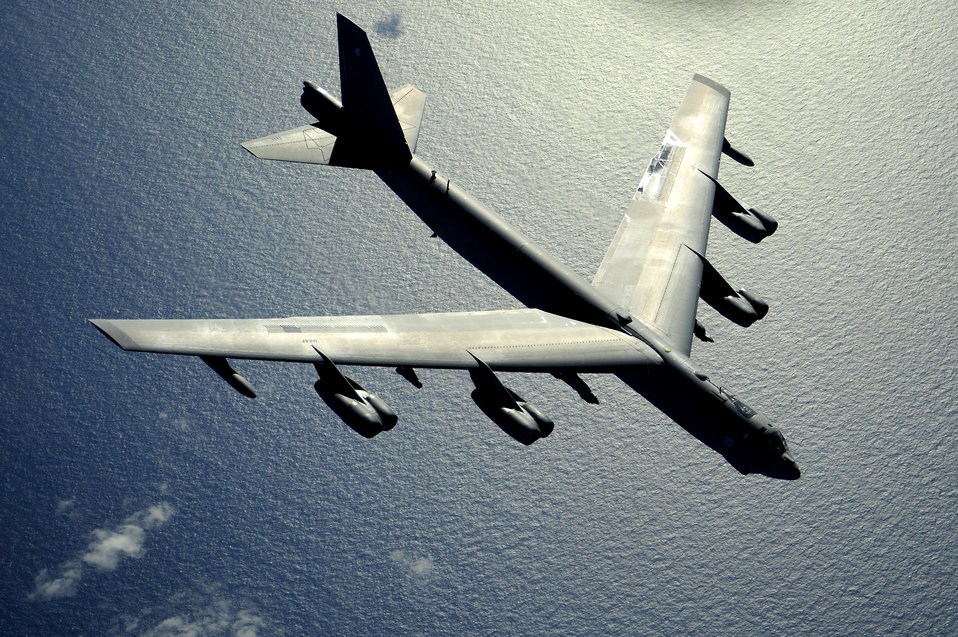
Rim of the Pacific exercise

A B-52 Stratofortress flies over the Pacific Ocean after an air refueling in support of exercise Rim of the Pacific, July 10, 2010. RIMPAC is a biennial, multinational exercise designed to strengthen regional partnerships and improve interoperability. The B-52 is from the 20th Bomb Squadron at Barksdale Air Force Base, La.